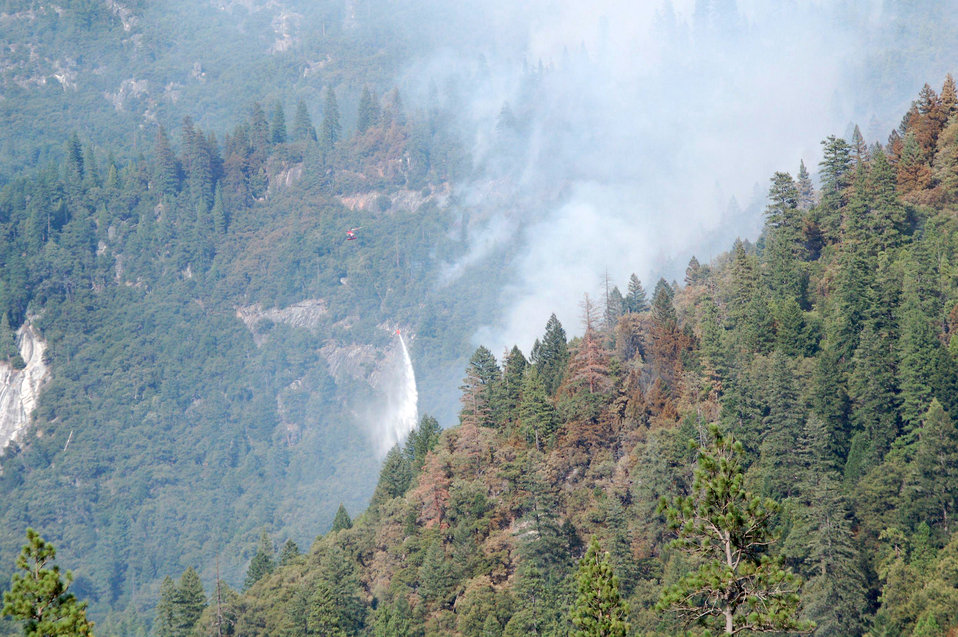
A skycrane works a hot spot at the Power Fire in California. The Power Fire in the Stanislaus National Forest near Beardsley Reservoir in California began on Aug. 5, 2013 is under investigation. The fire has consumed 881 acres and is 32% contained.